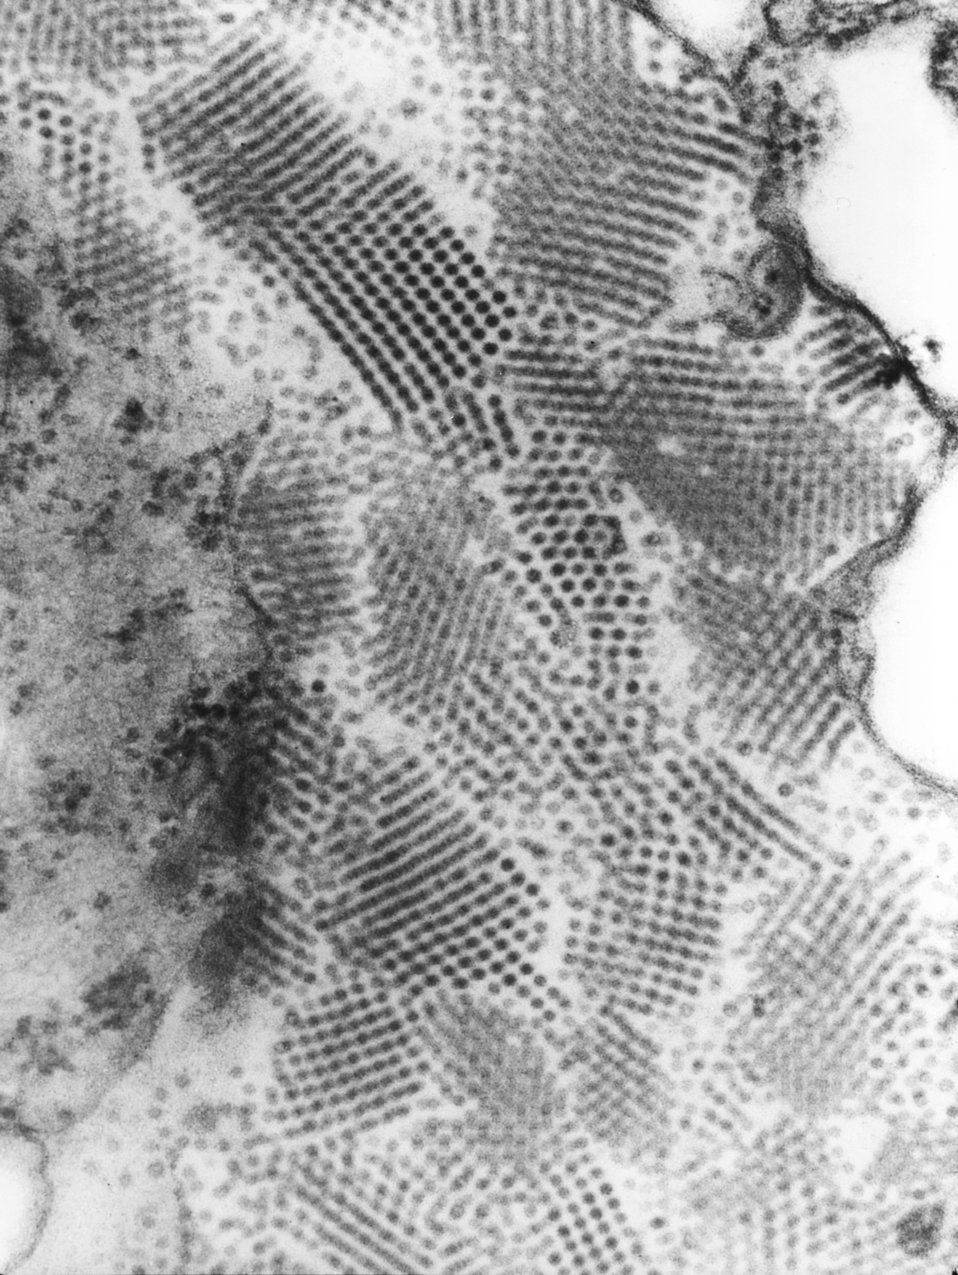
This transmission electron micrograph (TEM) revealed the presence of numbers of Nodamura virus virions. At its core, the Nodamura virus possesses a positive-sense, single-stranded RNA virus (( ) ssRNA) genome. Its outer protein coat, or 'capsid', is icosahedral (T=3) in shape, which means that its composed of 32 equilateral, triangular facets.